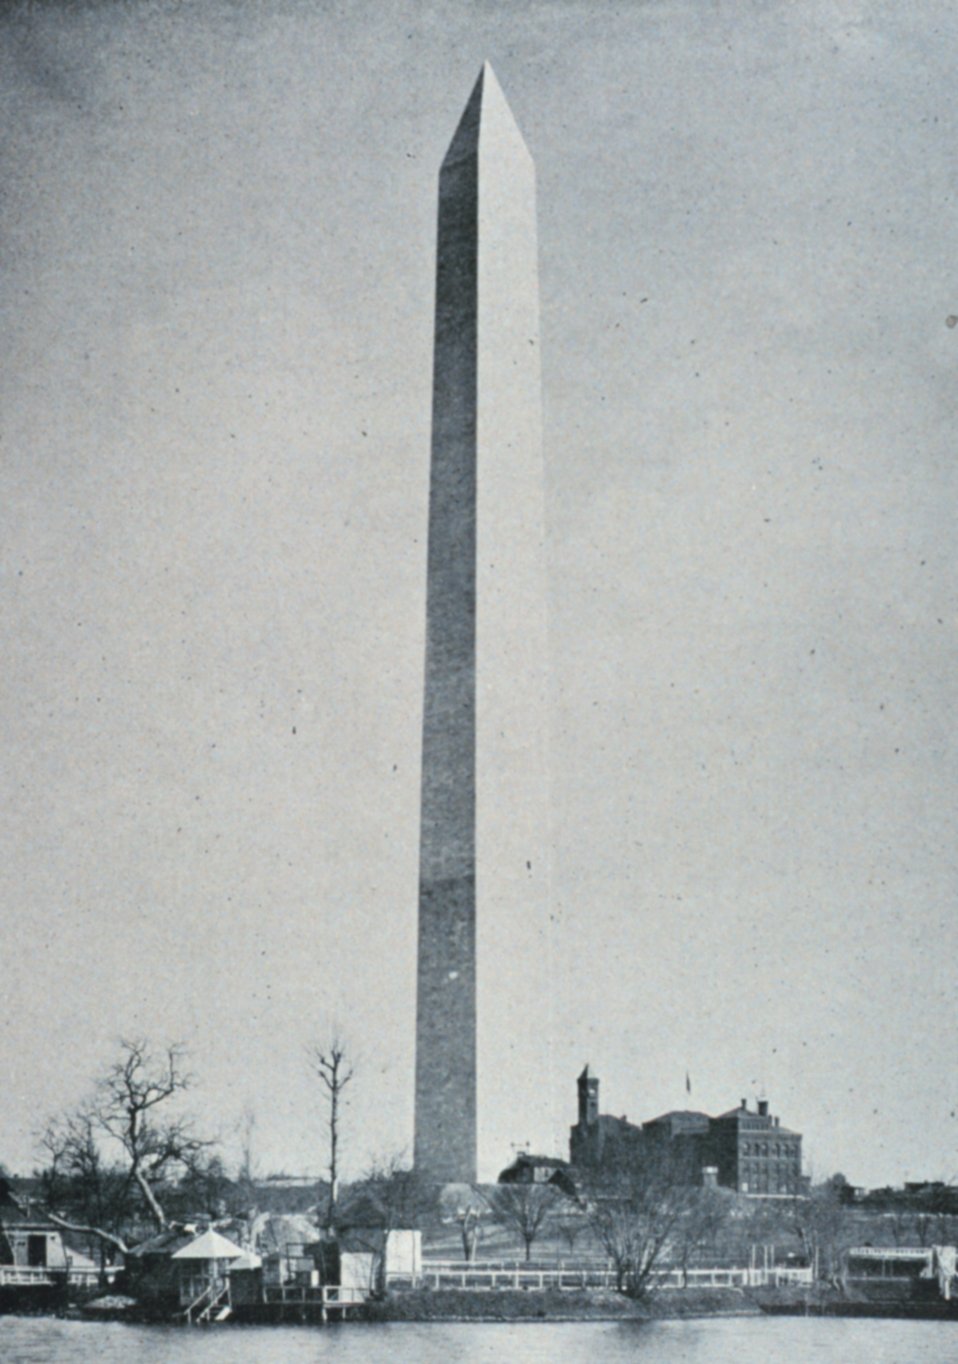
Washington Monument and Smithsonian Institution as seen from Potomac River. In: 'Protection from Lightning' by Alexander McAdie. 1894. Library Call Number TH 9057.M3 1894.